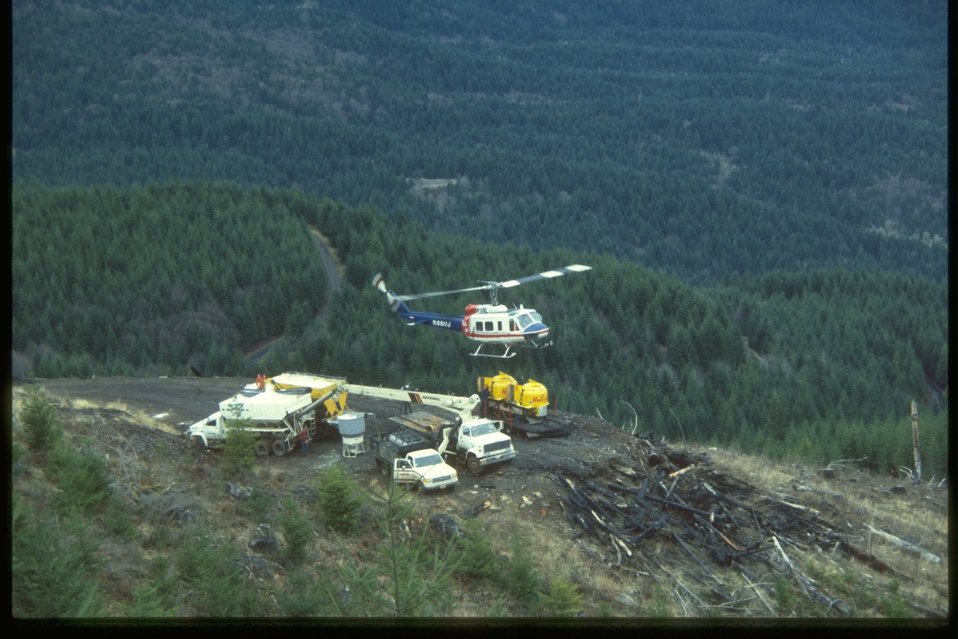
Aerial Fertilization Project